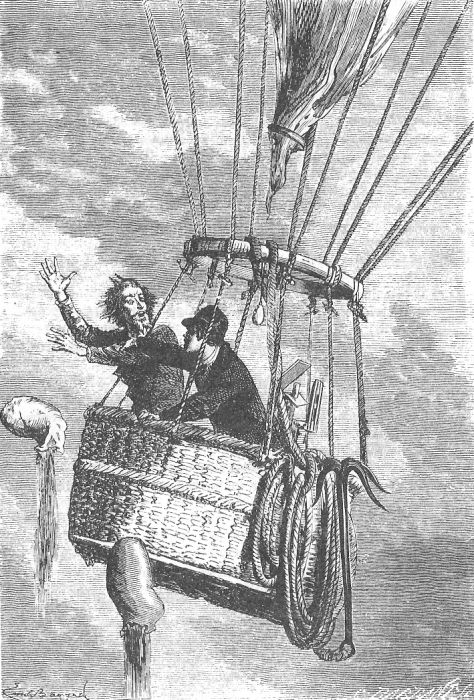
An illustration from Jules Verne's short story 'A Drama in the Air' (1851) drawn by √âmile-Antoine Bayard. Polski: Ilustracja opowiadania Juliusza Verne'a 'Dramat w balonie' (tytu≈Ç by≈Ç przek≈Çadany tak≈ºe jako 'Dramat w przestworzach', 1851) autorstwa √âmile-Antoine Bayarda. Fran√ßais†: Jules Verne: 'Un Drame dans les airs', par √âmile-Antoine Bayard. Orginal description taken from the book: Fran√ßais†: ¬´†Monsieur†!†¬ª m‚Äô√©criai-je avec col√®re.